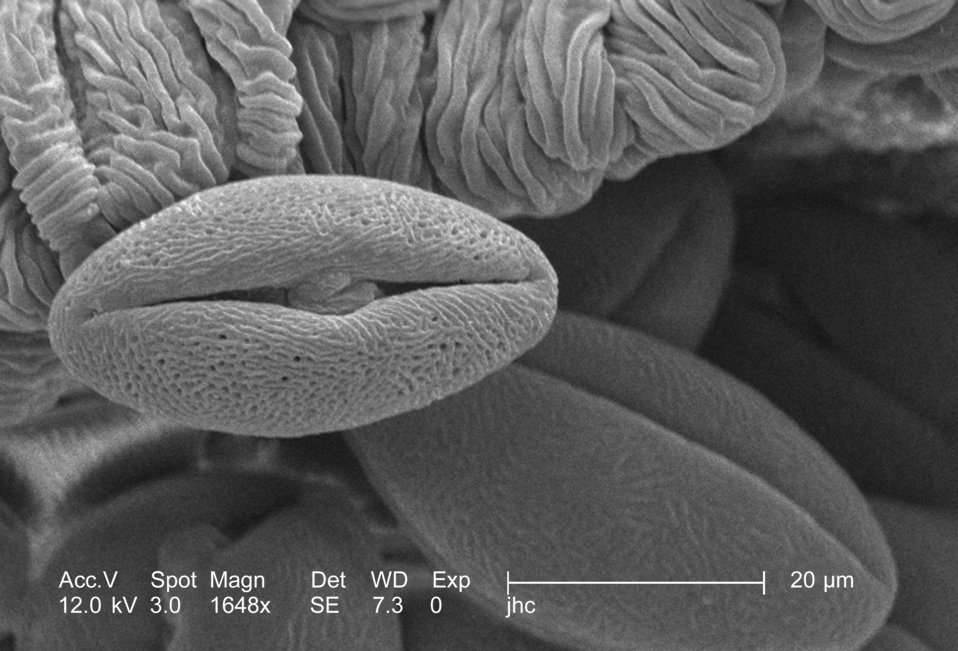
Under a high magnification of 1648x, this scanning electron micrograph (SEM) revealed some of the morphologic ultrastructure found amongst a collection of pollen found within the dehisced, or split open, anther of a yellow "Fireworks" sundrops, Oenothera fruticosa flower. These pollen grains were of the "tricolpate" type of pollen, which means that the outer surface is traversed from pole to pole, by three symmetrically placed furrows. The textured surface also identified this grain as of the "reticulate" type. Note that the grains' shape is elliptical, indicating that they had undergone a drying process, and were ready to be disseminated into the plants environment.